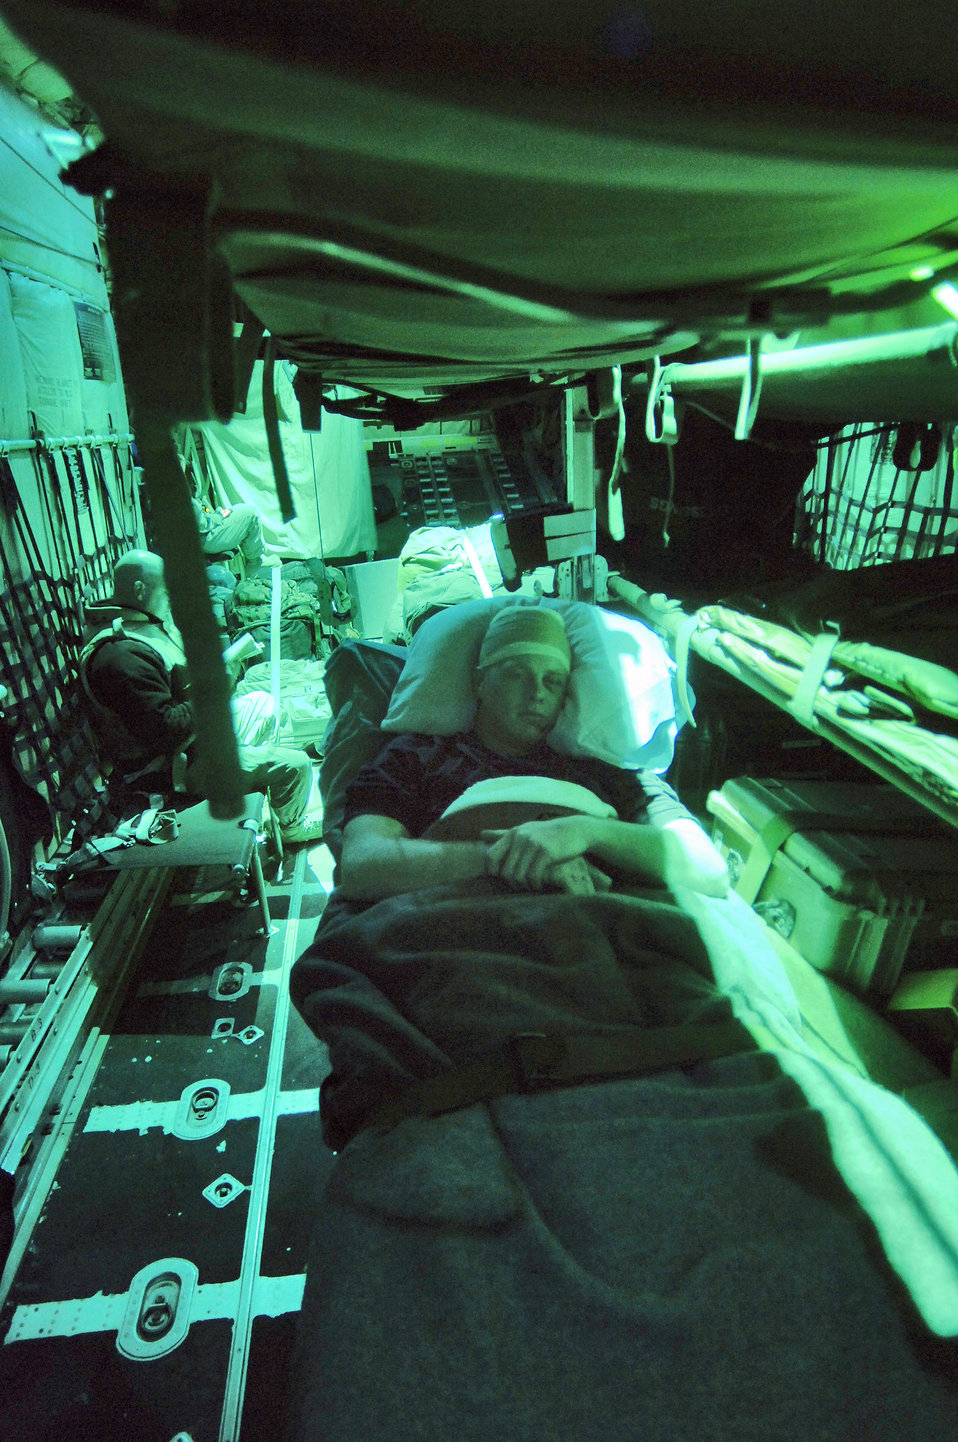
Critical care

BALAD AIR BASE, Iraq (AFPN) -- Army Sgt. Jamie Hughes of the 101st Airborne Division relaxes during a flight out of Iraq on a C-130 Hercules. Critical care air transport teams set up air evacuation litter racks and patient care kits so patients can have safe and comfortable flights.